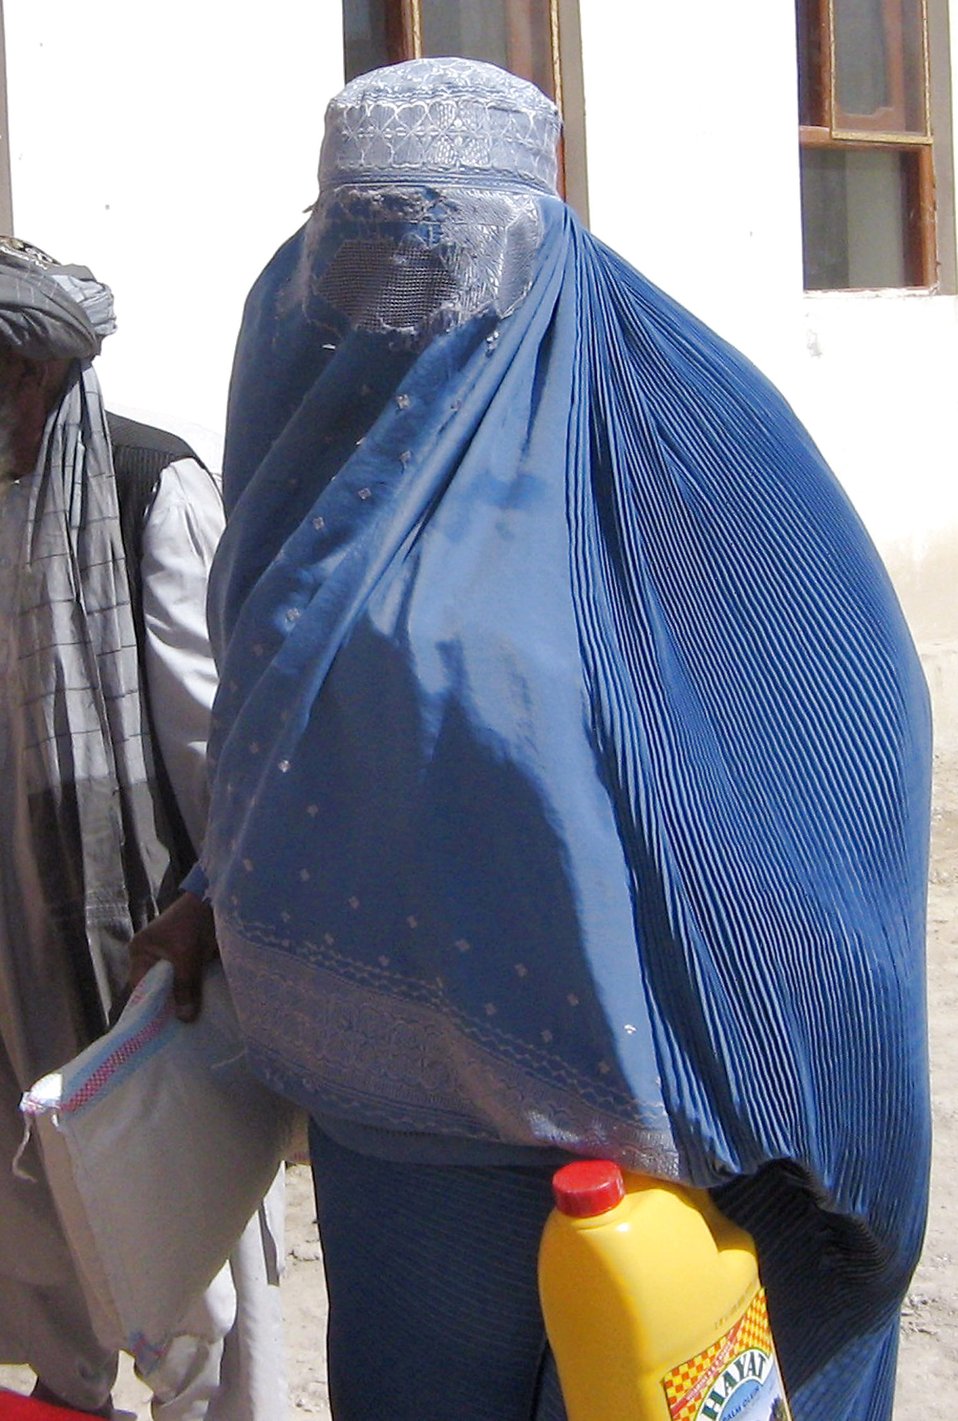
International Women?s Day brings unity, call for peace

An Afghan woman clad in a traditional burka accepts gifts at an International Women's Day celebration March 8 at Qalat, Afghanistan. Rahima, the director of women's affairs, asked for the support of local scholars as well as the national and international community as women in Afghanistan continue to march forward in the fight for women's rights.